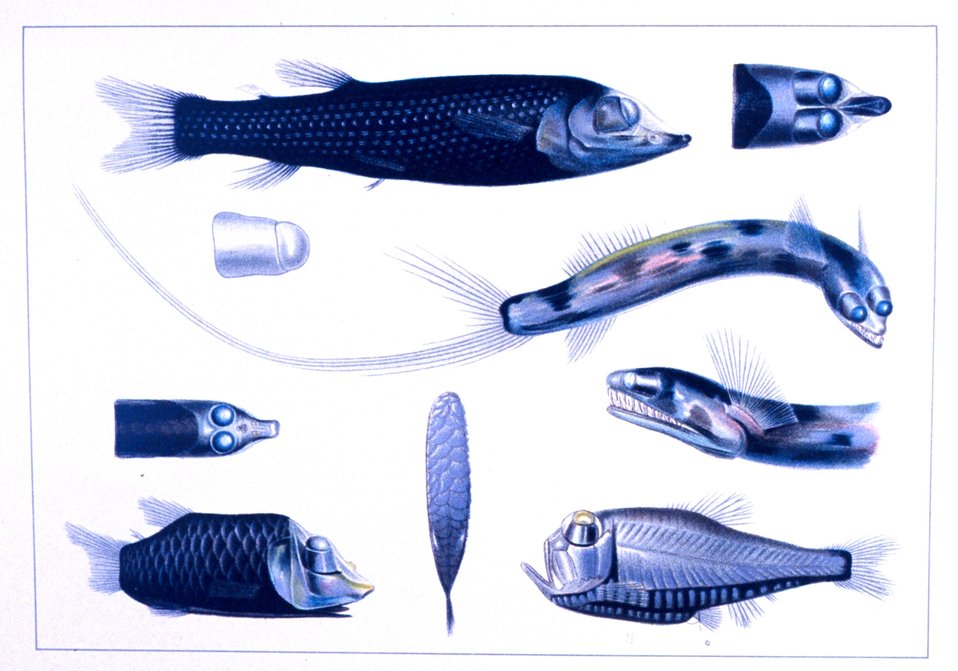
Pelagic deep sea fish with telescoping eyes. Top: Winteria telescopa, caught in Gulf of Guinea in 1200 meters. Middle: Gigantura n. gen. Brauer, captured in Gulf of Guinea and west Indian Ocean at 2500 and 3000 meters respectively. Lower left: Opisthoproctus soleatus Vaill, captured in Gulf of Guinea at 4000 meters. Lower right: Argyropelecus sp., from off Somali coast in 5000 meters. P.576.